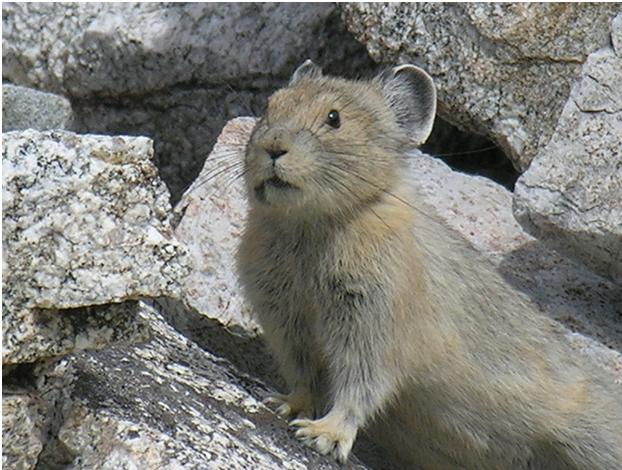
squirrel

According to the World Wildlife Fund, the American Pika (Ochotona princeps) could be the first mammal victim of climate change